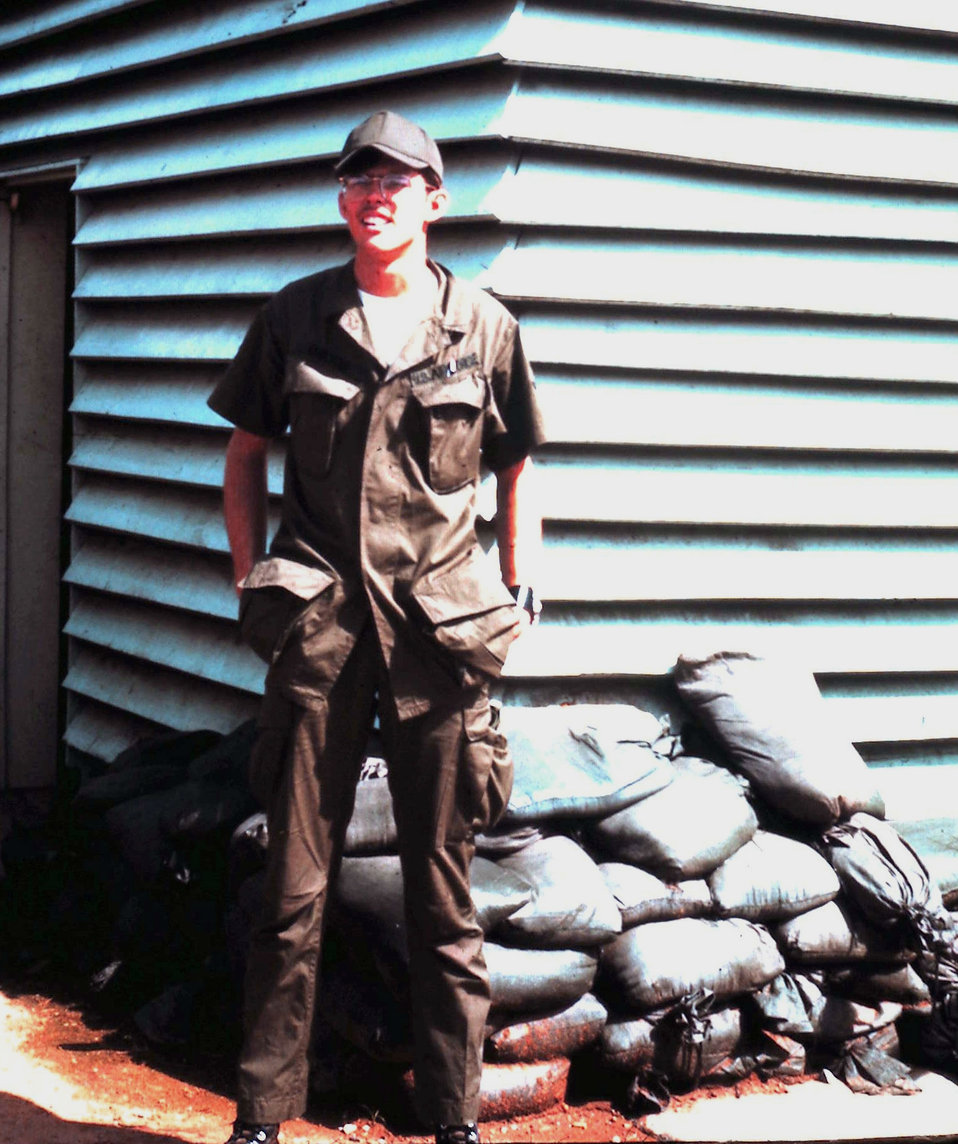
Steve Chilton (U.S. Air Force 1969-1972) is currently the Aquatic Invasive Species Coordinator for Lake Tahoe and Northern Nevada.